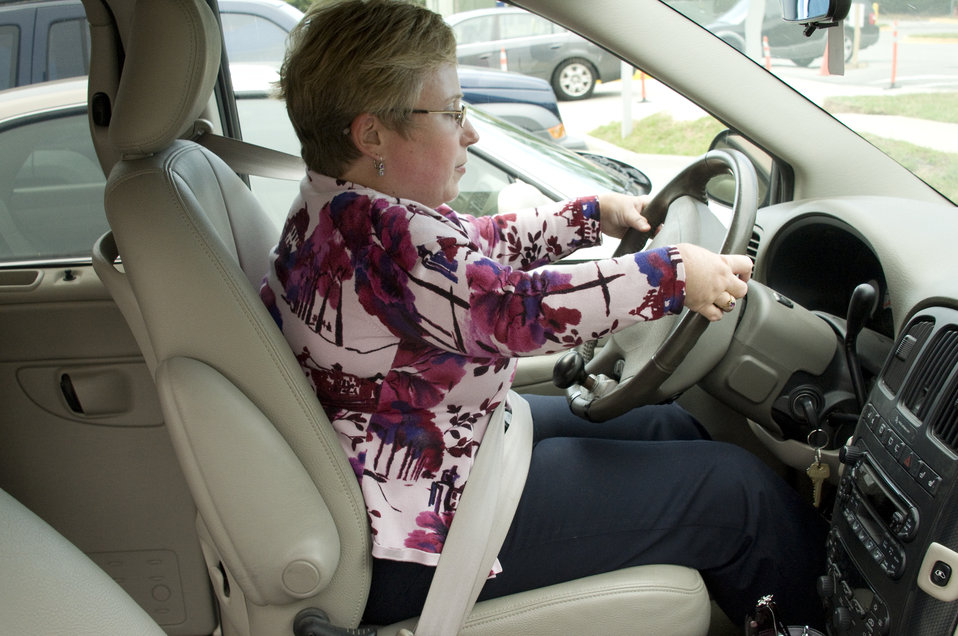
The woman pictured here, had just boarded her vehicle by way of an access ramp, while seated in her wheelchair, and had maneuvered herself into the driver's-side swivel seat. Note the additional handle located at the bottom of the steering wheel, which due to her disability, would enable her to operate the accelerator and braking system using this hand control.